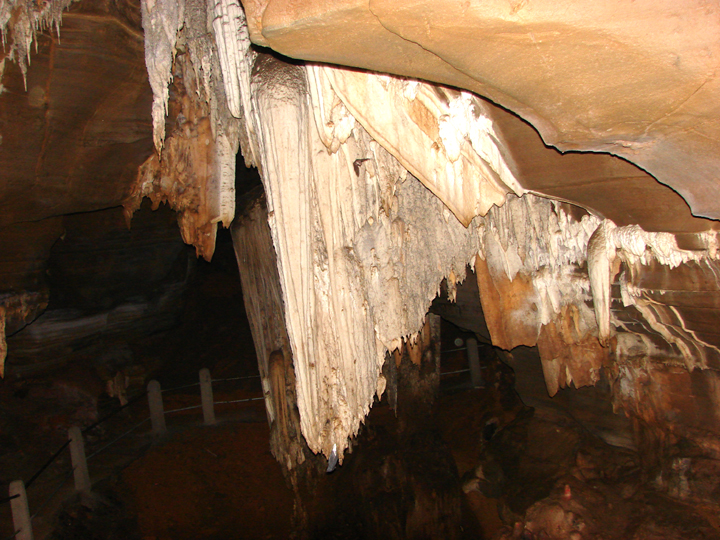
Inner view of Dandak Cave of Chhattisgarh